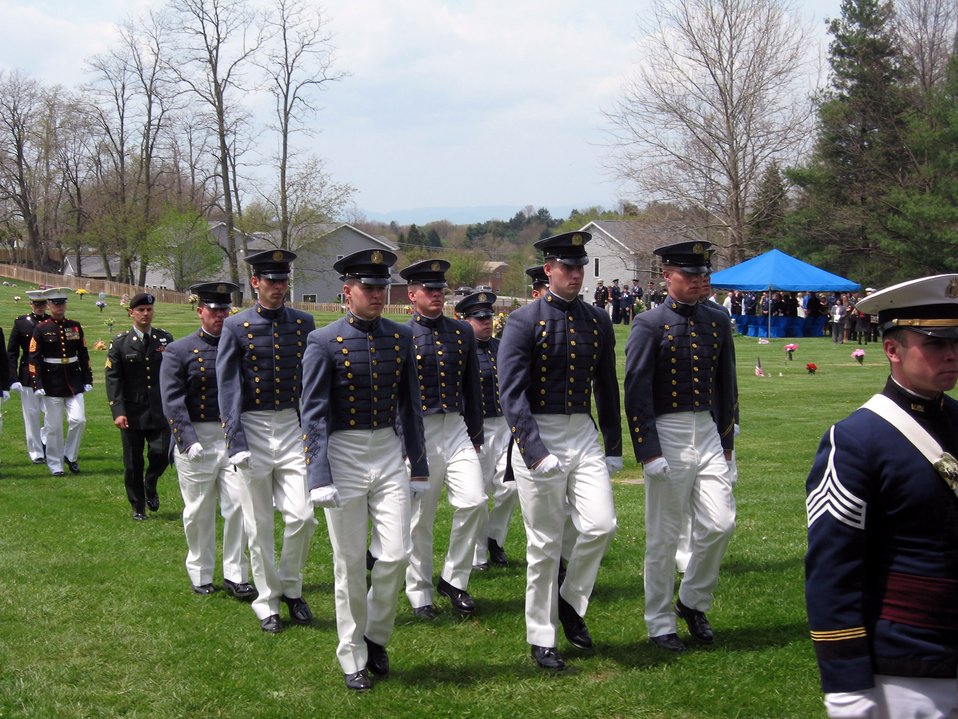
Virginia Tech corps of cadets pay honors to one of their own

A contingent of cadets from Virginia Military Institute marched with the Virginia Tech Corps of Cadets in honor of Cadet Matthew La Porte April 25. Cadet La Porte, a sophomore in Air Force ROTC Detachment 875 and the Virginia Tech Corps of Cadets, was one of the 32 students and faculty killed during the shooting incident at the school April 16.